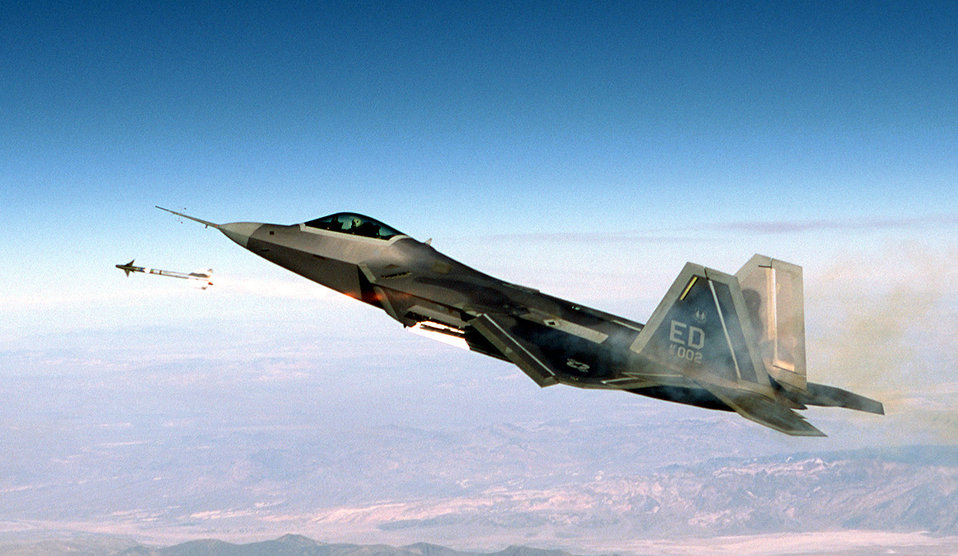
Raptor 4002

FILE PHOTO -- F/A-22 Raptor 4002 fires an AIM-9 Sidewinder air-to-air missile during a separation test at 40,000 feet. Flown at a 26-degree angle-of-attack at only Mach .4 speed, the test flight demonstrated the Raptor's ability to operate at slow speeds in a combat environment and still maintain maneuverability.